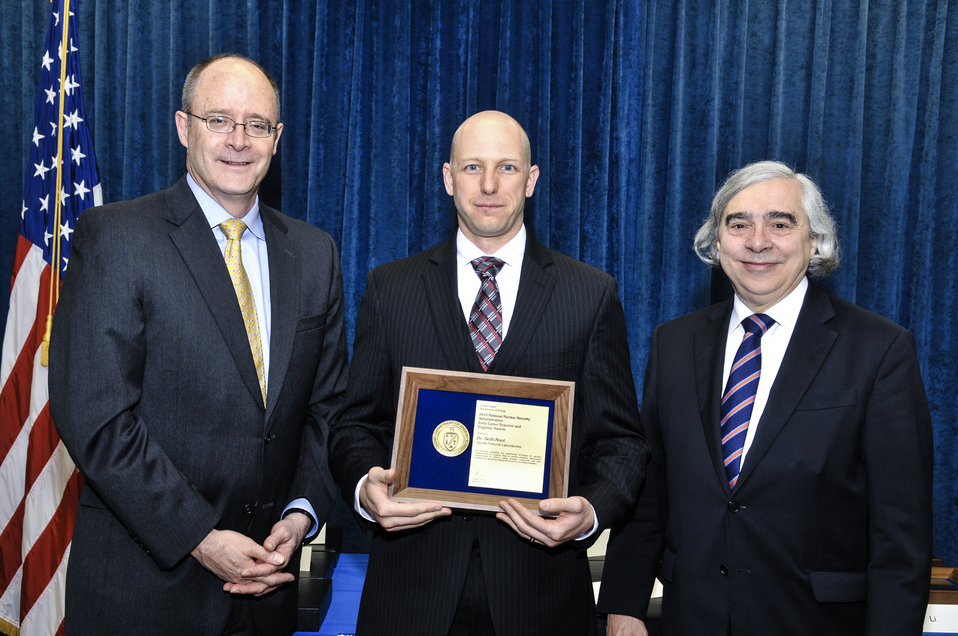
PECASE Awards: DOE Secretary E. Moniz with DOE Acting Administrator and Acting Undersecretary for Nuclear Security Bruce Held on April 14, 2014